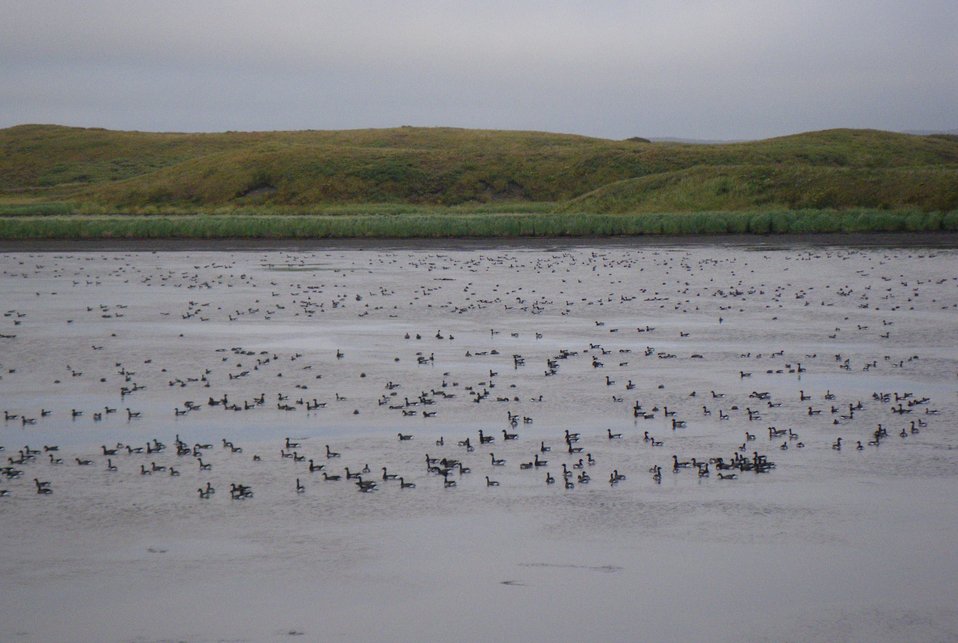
Brant, Izembek Lagoon, Izembek National Wildlife Refuge